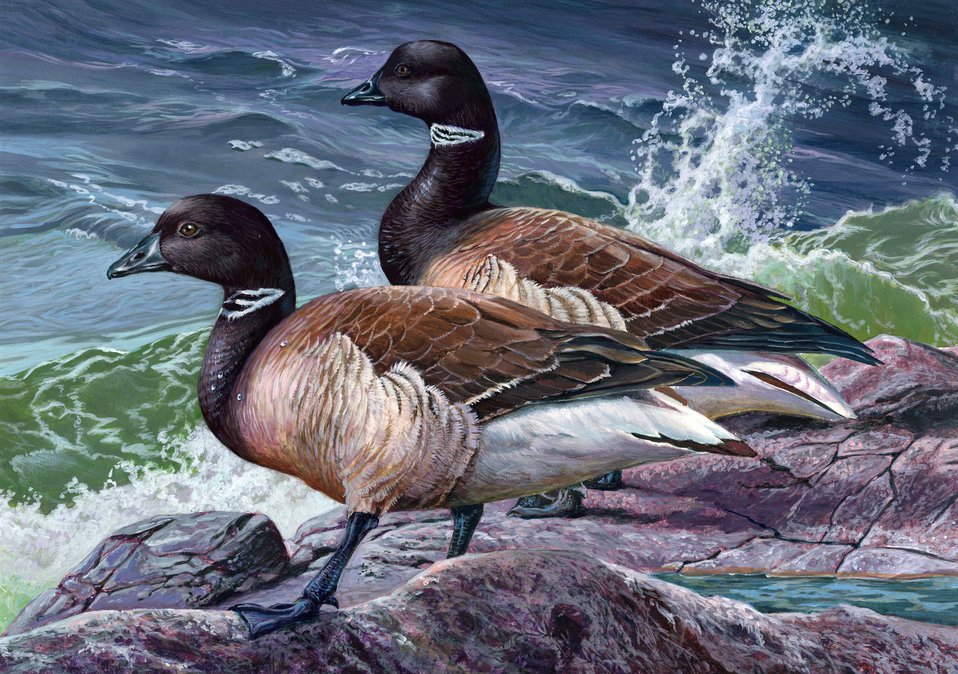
Painting by Kip Richmond, 3rd Place.

Brant Pair on Acrylic by Kip Richmond from Apex North Carolina. 3rd Place.